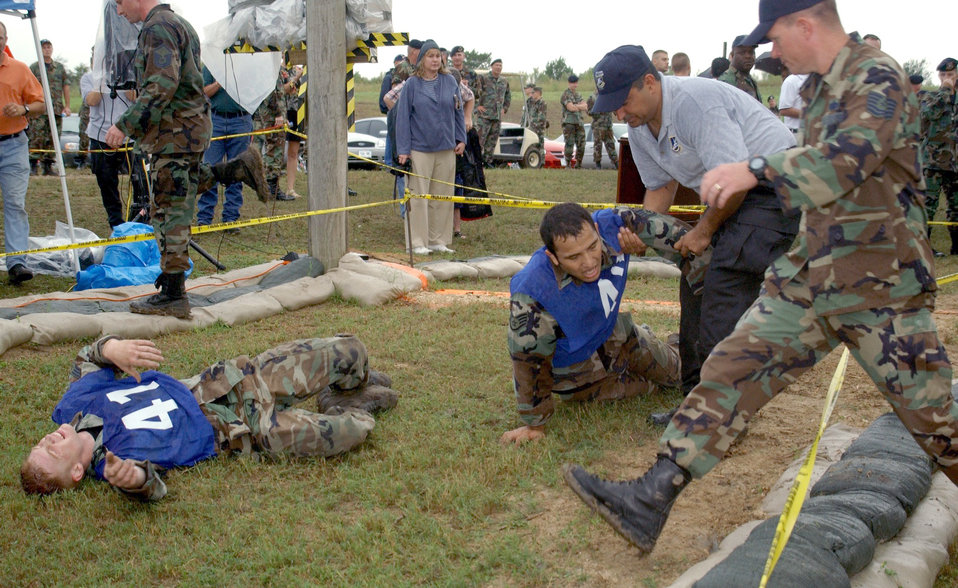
Defender Challenge

LACKLAND AIR FORCE BASE, Texas -- Senior Airman James Pittman, left, and Staff Sgt. Brandon Gonzales collapse after completing the Defender Challenge 2004 fitness challenge event. Airman Pittman, from the 37th Security Forces Squadron here, and Sergeant Gonzales, from the 12th SFS at Randolph AFB, Texas, are on the Air Education and Training Command team. The annual Defender Challenge here pits security forces teams from Air Force major commands, the Royal Air Force Regiment and the Department of Energy against each other in events that test marksmanship, tactics, physical fitness and teamwork. This year's competition runs Oct. 23 to 28.